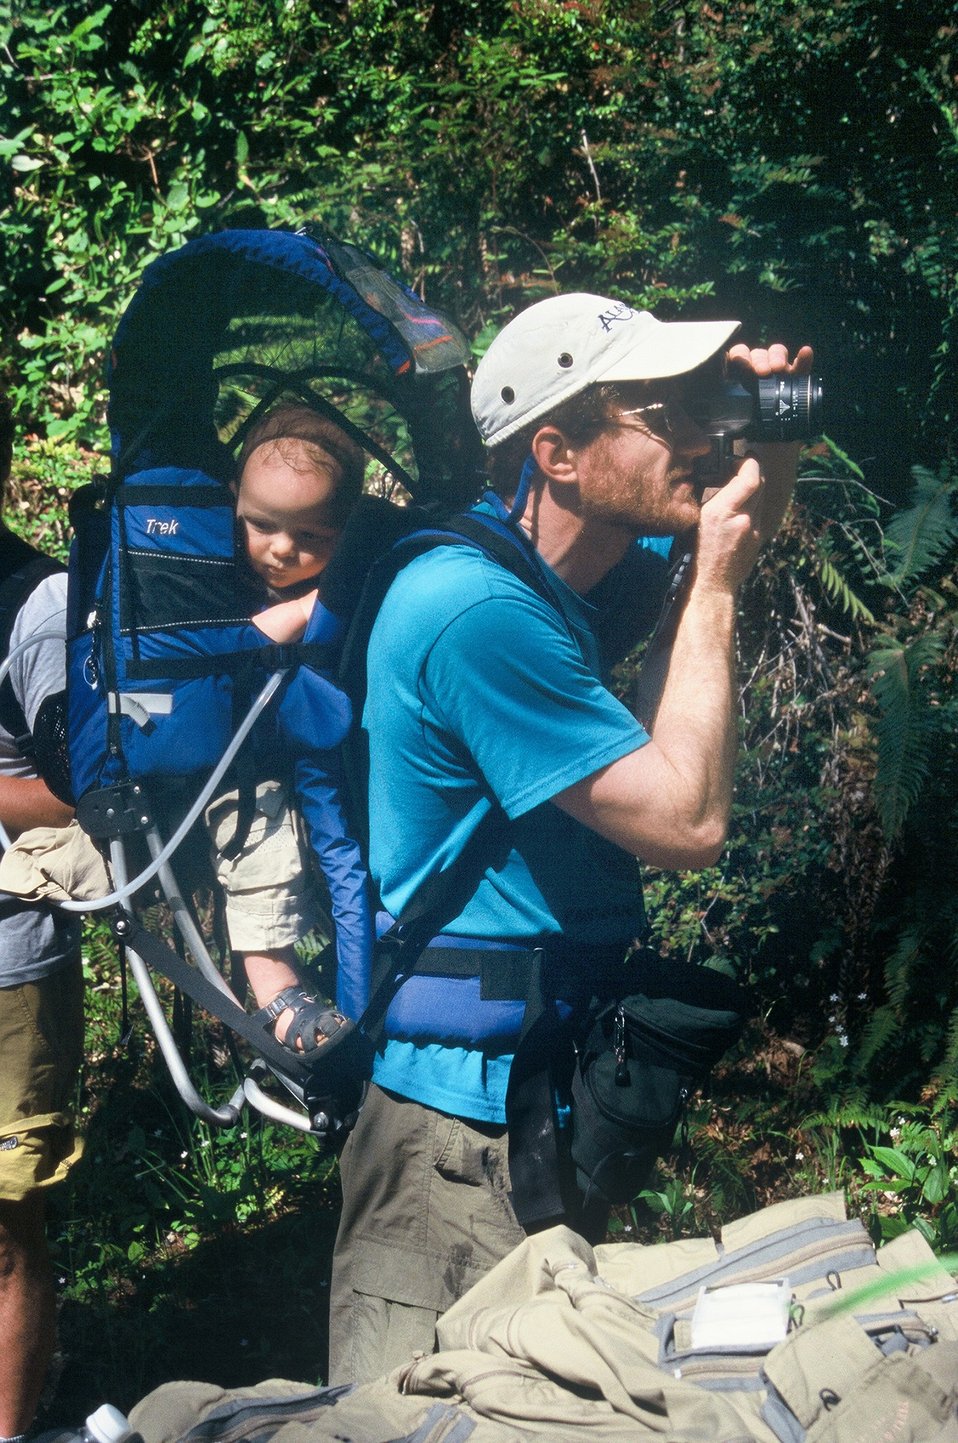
Wild section of the Rogue River from Grave Creek to Foster Bar May 19 to May 22.